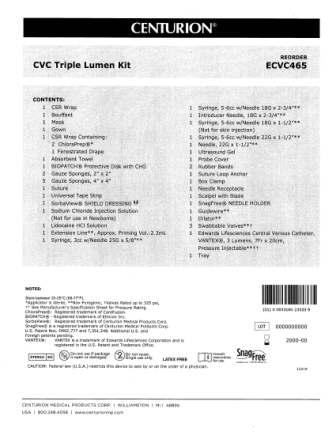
RECALLED - Convenience kits which contain bacteriostatic sodium chloride solution by American Regent

April 1, 2011 - Product Recall - Centurion Medical Products Initiates Voluntary Recall of Customized Convenience Kits (including select Central Venous Catheter, PICC Insertion, and VAD Trays) that contain American Regent’s Bacteriostatic Sodium Chloride Injection, USP, 0.9% 30 mL Multiple Dose Vials.